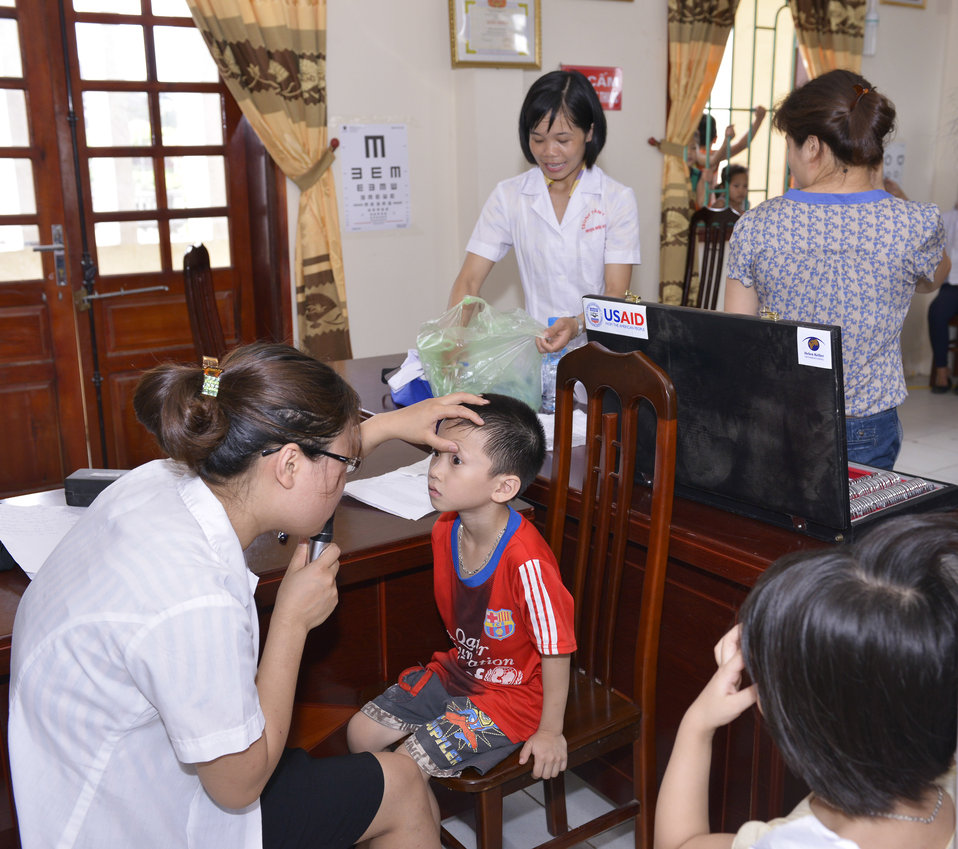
Eye screening for kindergarten children in Quoc Oai district of Hanoi

Quoc Oai, Hanoi. May 31, 2014.